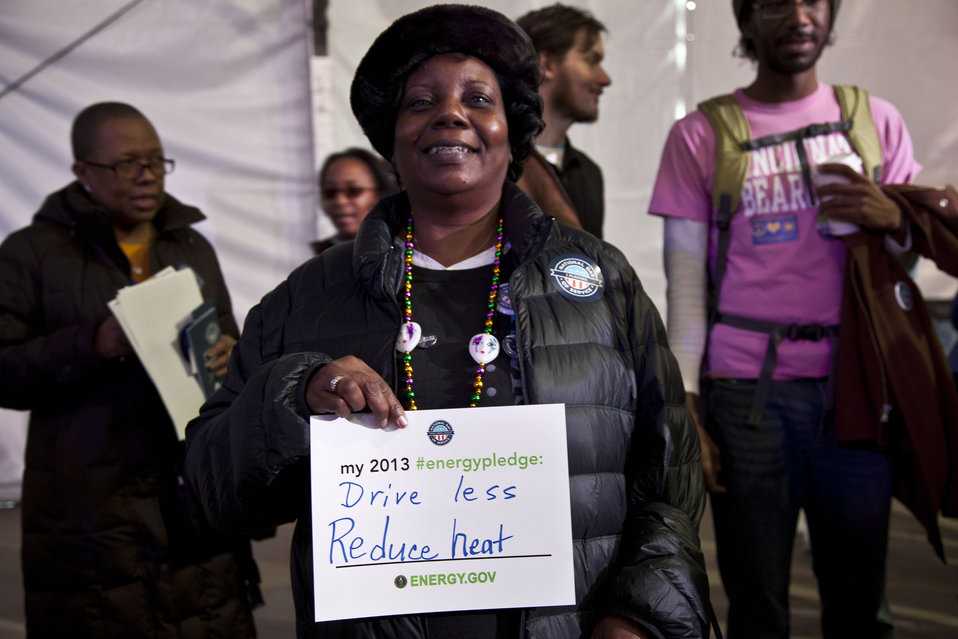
What's your #energypledge?